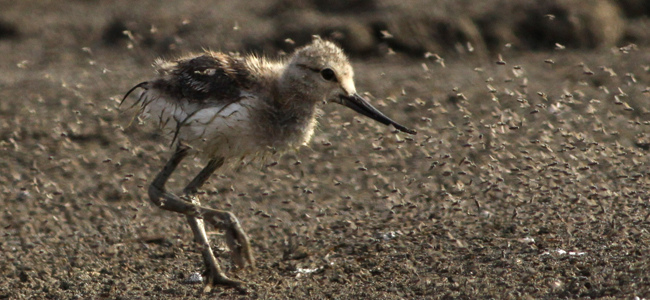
American Avocet chick at San Diego National Wildlife Refuge